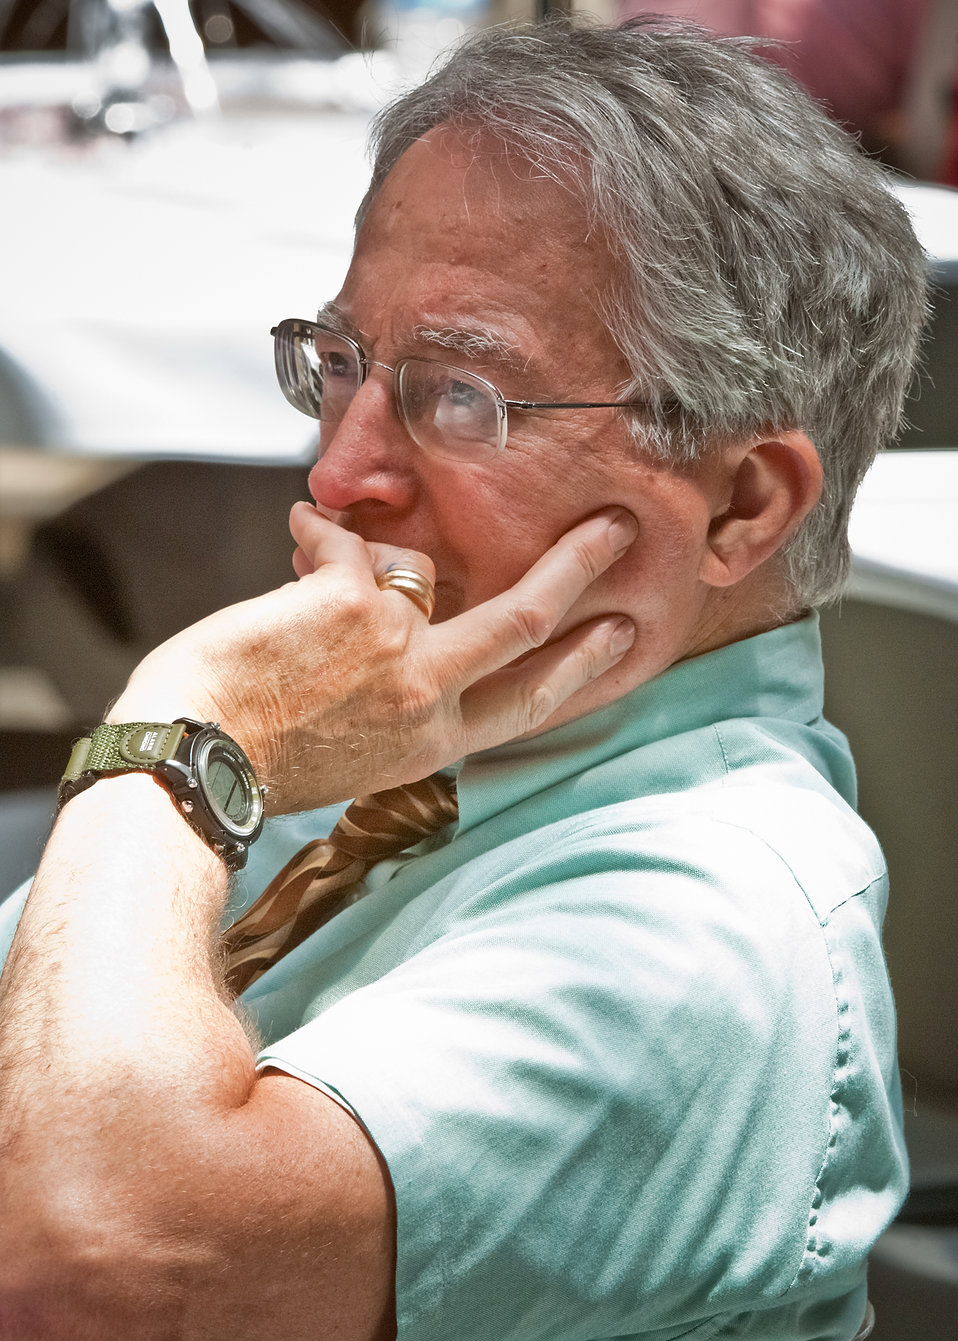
Mark Bigger, Rural Development listens to panel members explain the advantages and cost benefits to employees and the Department of Agriculture during a “Telework Program Party/Brown Bag” event on the patio of the Jamie Whitten Building of United States Department of Agriculture, in Washington, DC, on Tuesday, June 7, 2011. The event included an interactive telework panel and exhibits from the field of telework, telecommuting and mobile work environments. The event was open to all USDA employees, supervisors, managers, human resources staff and USDA telework program coordinators.